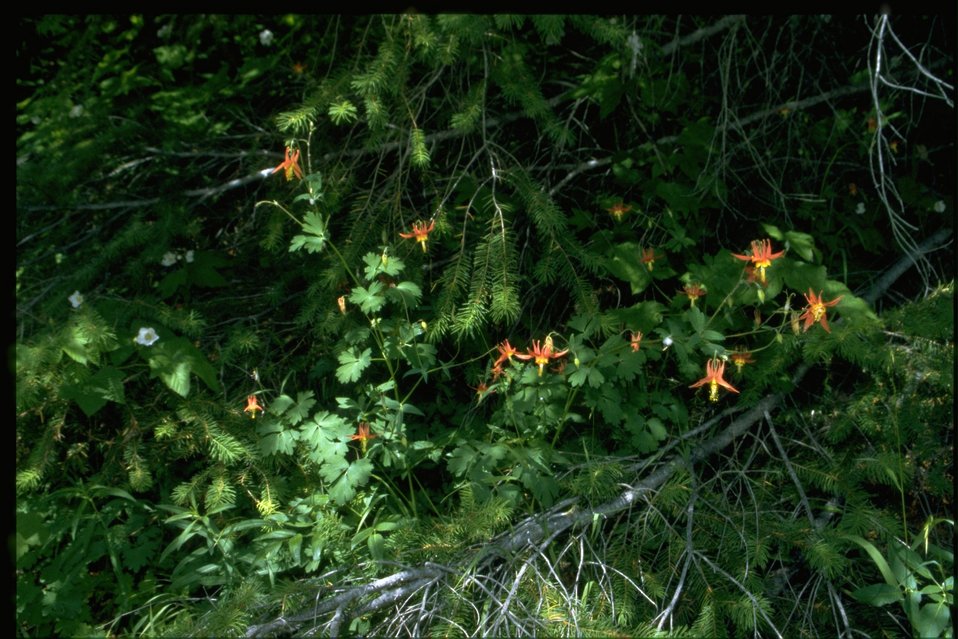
Farshot of Aquilegia formosa.